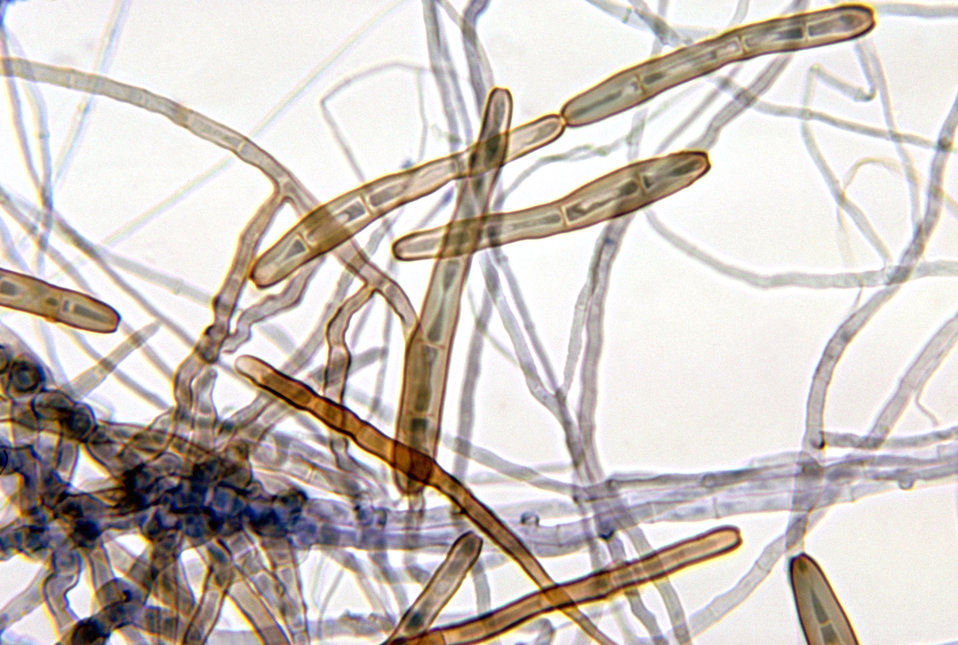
This photomicrograph depicts the mould Corynespora cassiicola of the group Fungi Imperfecti, taken from a slide culture.